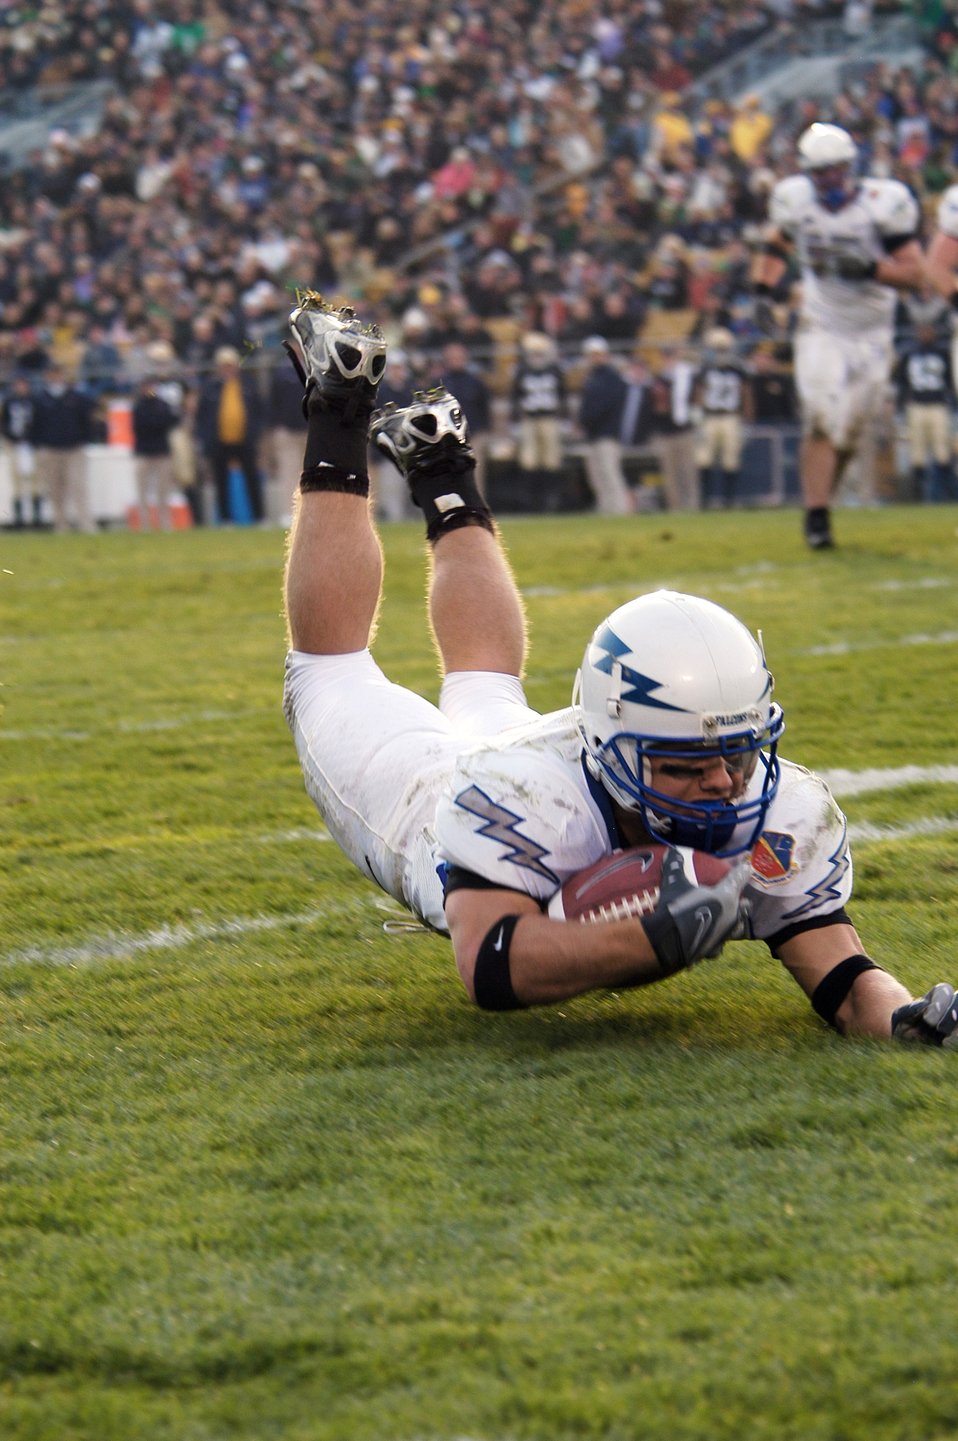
Football: Falcons outfight Irish, 41-24

U.S. Air Force Academy Falcon z-back Chad Hall dives for extra yardage during Air Force's 41-24 victory over the Fighting Irish Nov. 10 at Notre Dame Stadium in Indiana. Hall accounted for 242 all-purpose yards (rushing, receiving and returning kicks) in the game.